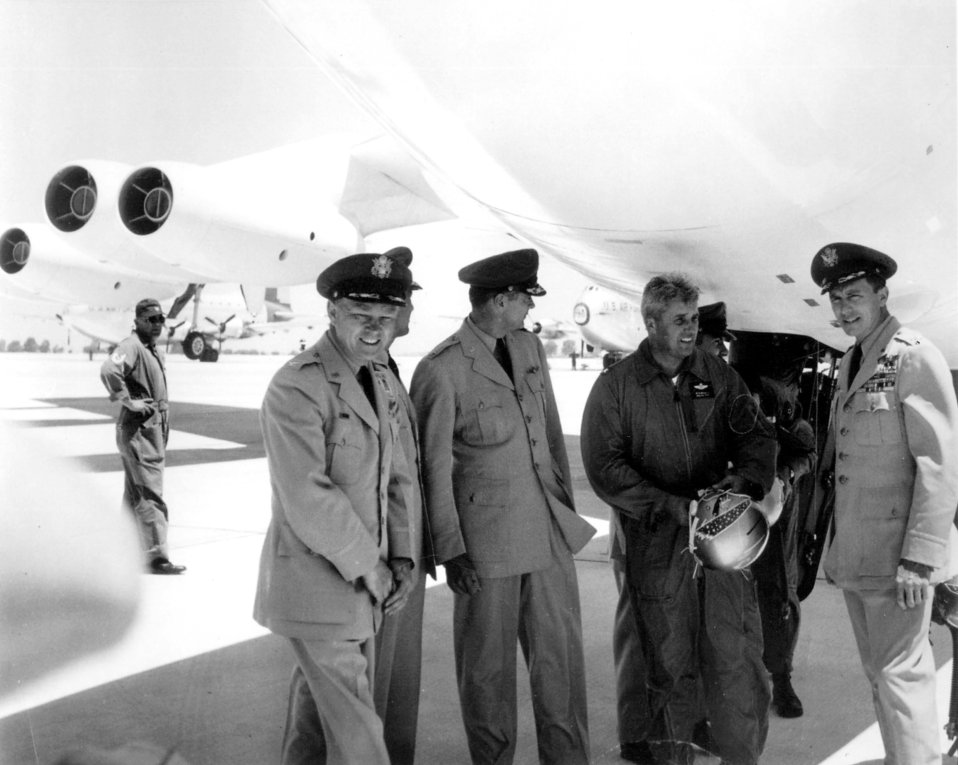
50th anniversary of B-52 delivery

CASTLE AIR FORCE BASE, Calif. -- Retired Brig. Gen. William Eubank, the 93rd Bomb Wing commander, talks with Air Force officers on the flightline here after the first B-52 Stratofortress operational flight June 29, 1955.